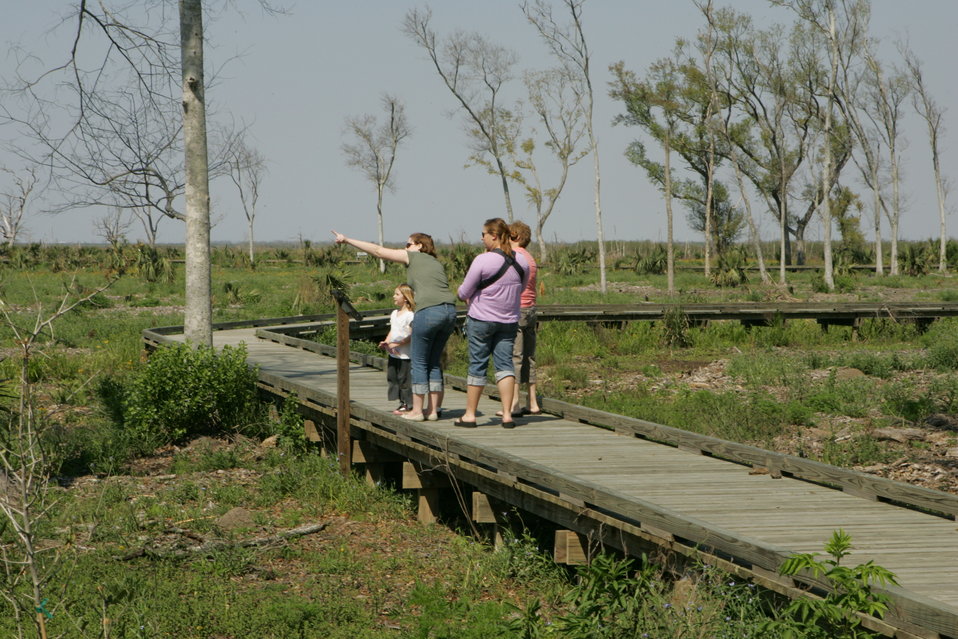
A family having fun.

These women are teaching their children the importance of nature and refuges.